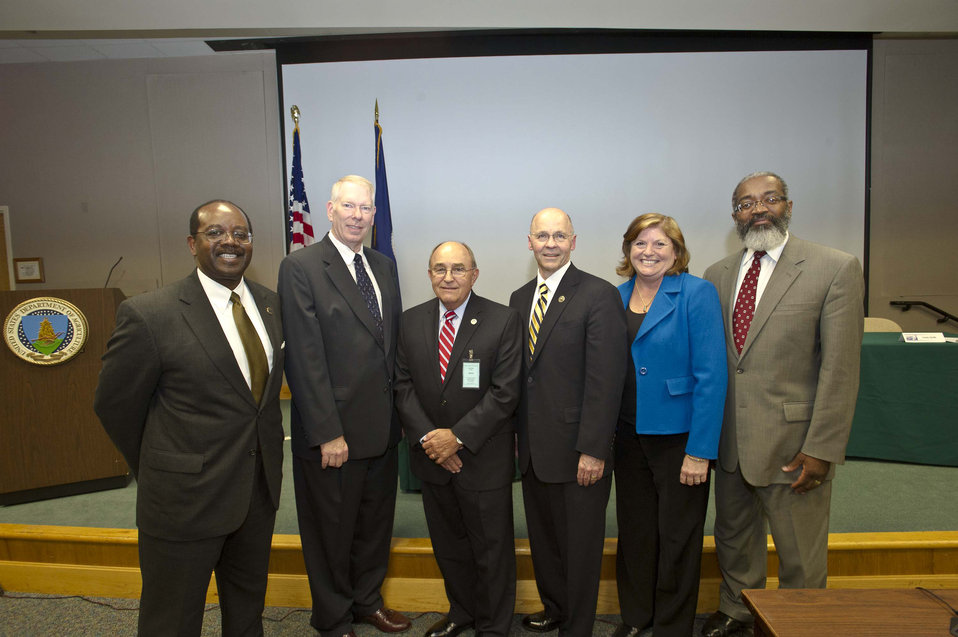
Current and former U.S. Department of Agriculture (USDA) Animal and Plant Health Inspection Service (APHIS) Administrators meet to celebrate the 40th anniversary of the founding of APHIS on May 16, 2012. (L to R Former USDA APHIS Administrators Terry Medley, Craig ReCurrent and former U.S. Department of Agriculture (USDA) Animal and Plant Health Inspection Service (APHIS) Administrators meet to celebrate the 40th anniversary of the founding of APHIS on May 16, 2012. (L to R Former USDA APHIS Administrators Terry Medley, Craig Reed, Bobby Accord, Ron DeHaven, Cindy Smith, and current USDA APHIS Administrator Gregory Parham).